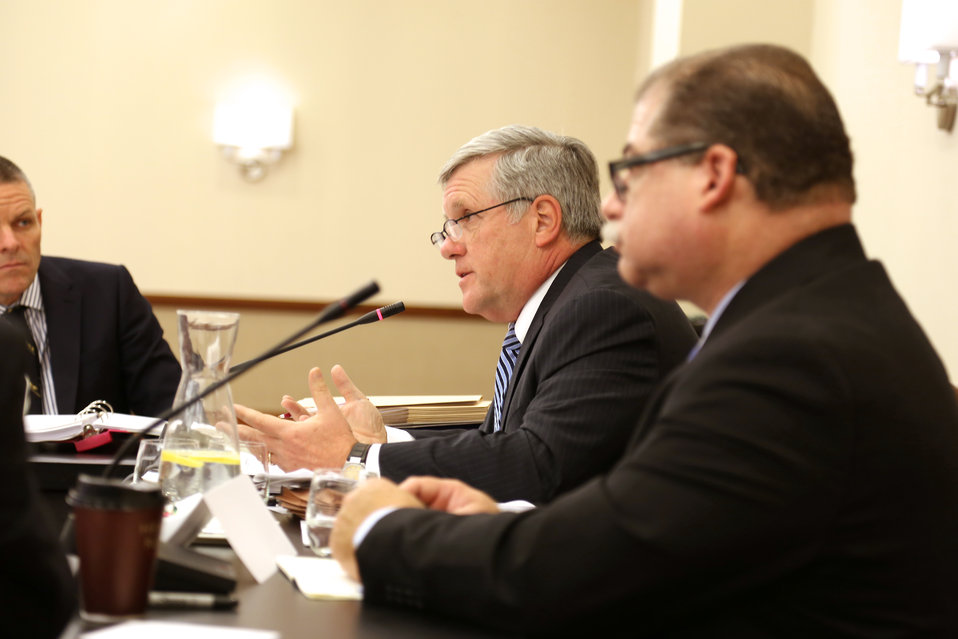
Wildlife Trafficking Advisory Council Meeting March 20, 2014